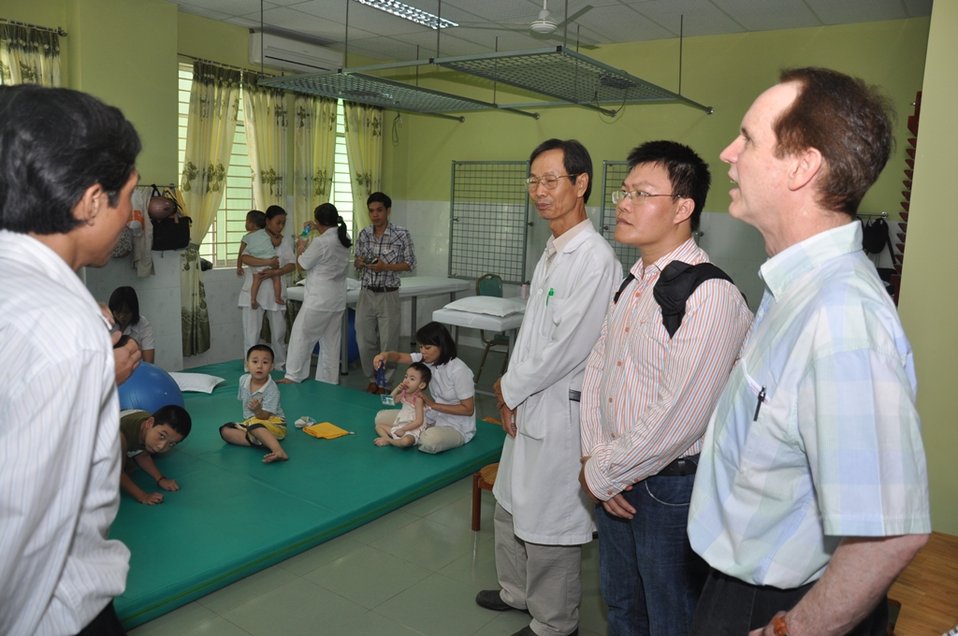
USAID assists persons with disabilities in Vietnam

USAID Mission Director Frank Donovan, right, visits a center supporing people with disabilities in Danang.